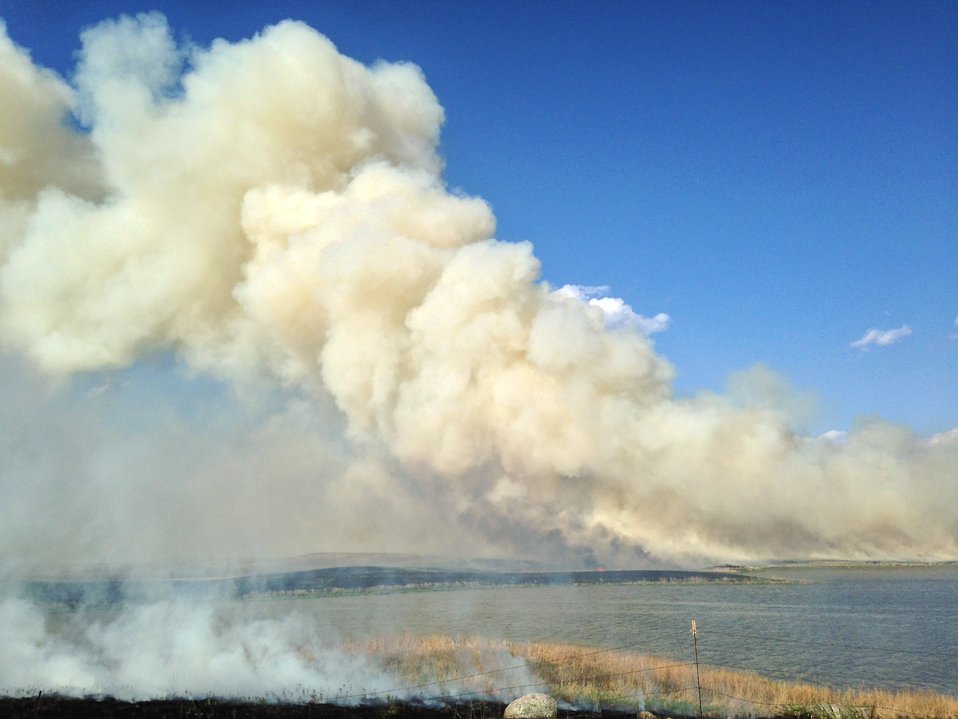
Knecht WPA Prescribed Fire

Prescribed fire is a management tool that is used to maintain the vigor of a prairie. As with grazing, native prairie plants adapted to the frequent fires that raged across the Great Plains. These fires were historically started by lightning strikes and burned many miles of uninterrupted prairie. Fire is one of the best management tools for weakening non-native species. It removes the accumulated litter layer, stimulates new plant growth, and can be used to prepare ground for restoration.